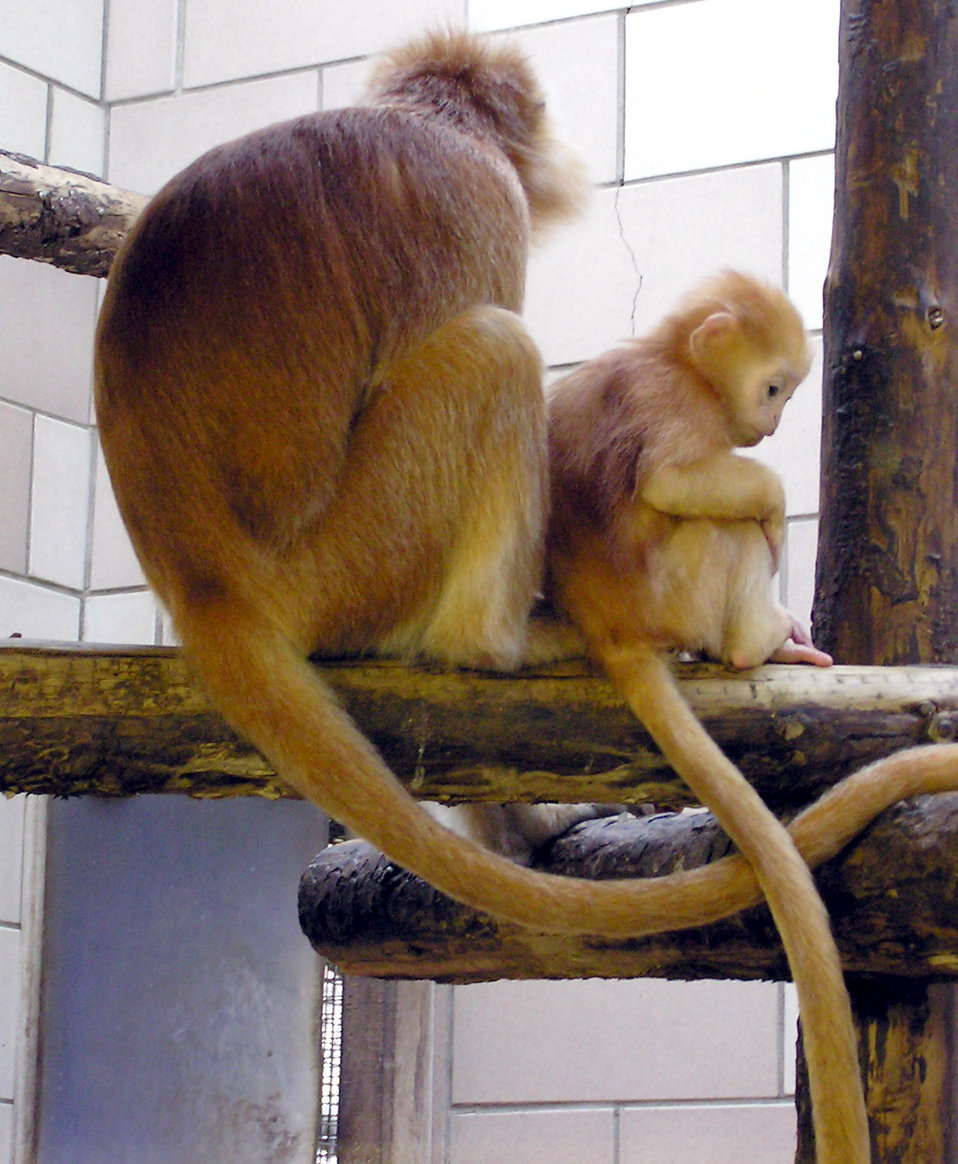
Javan Langur (or Javan Lutung) Trachypithecus auratus at Bristol Zoo, Bristol, England. Note that, at April 2006, if Javan Langur is put into Google there are 11600 results but Javan Lutung gives 148. So maybe the better article title would have been Javan Langur?